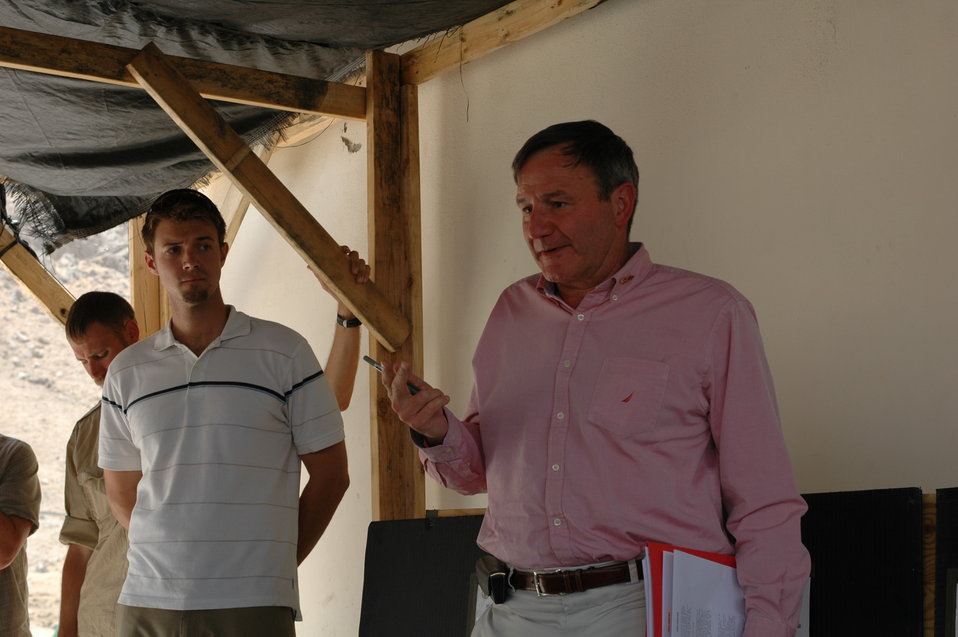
CODEL Berman